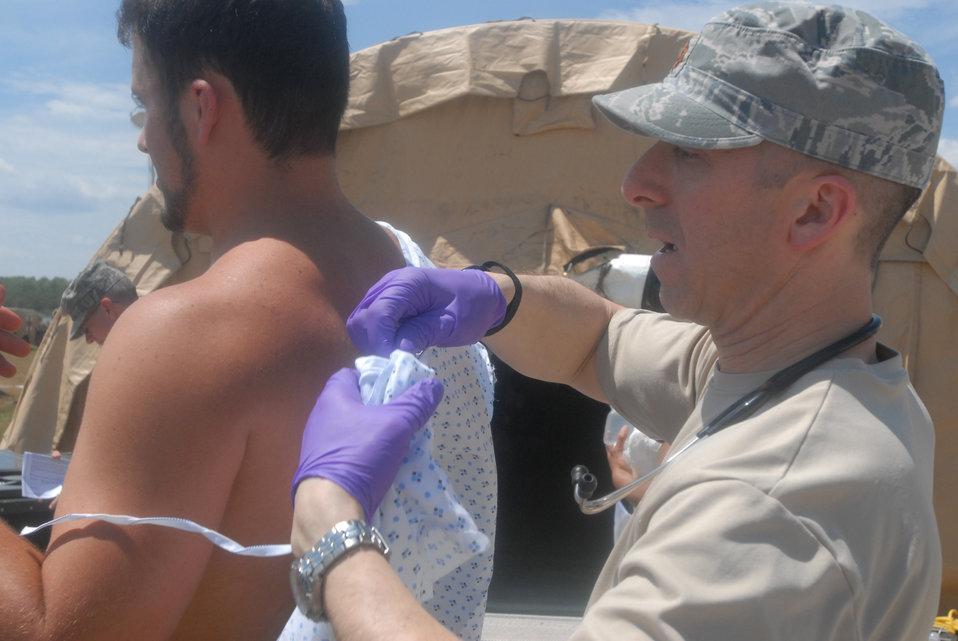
Vibrant Response 13

Maj. (Dr.) Michael Maine, a family practice doctor, helps a